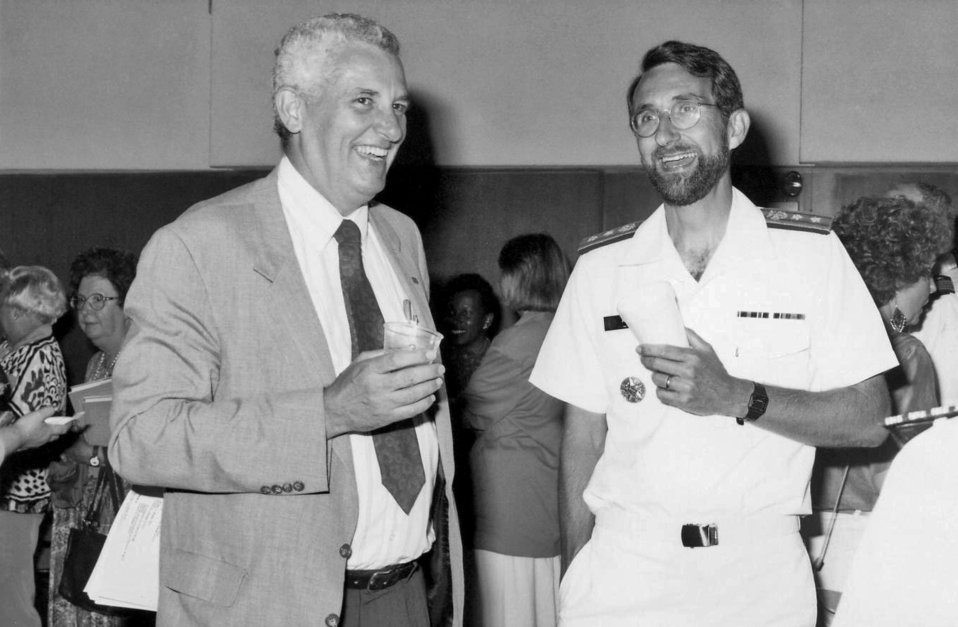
This 1992 photograph, taken during the Centers for Disease Control's 46th anniversary ceremonies, showed Fred Kroger (left), who at the time was a member of the organization's Division of Health Communications, speaking with former CDC Director, Dr. William L. Roper (1990 - 1993).